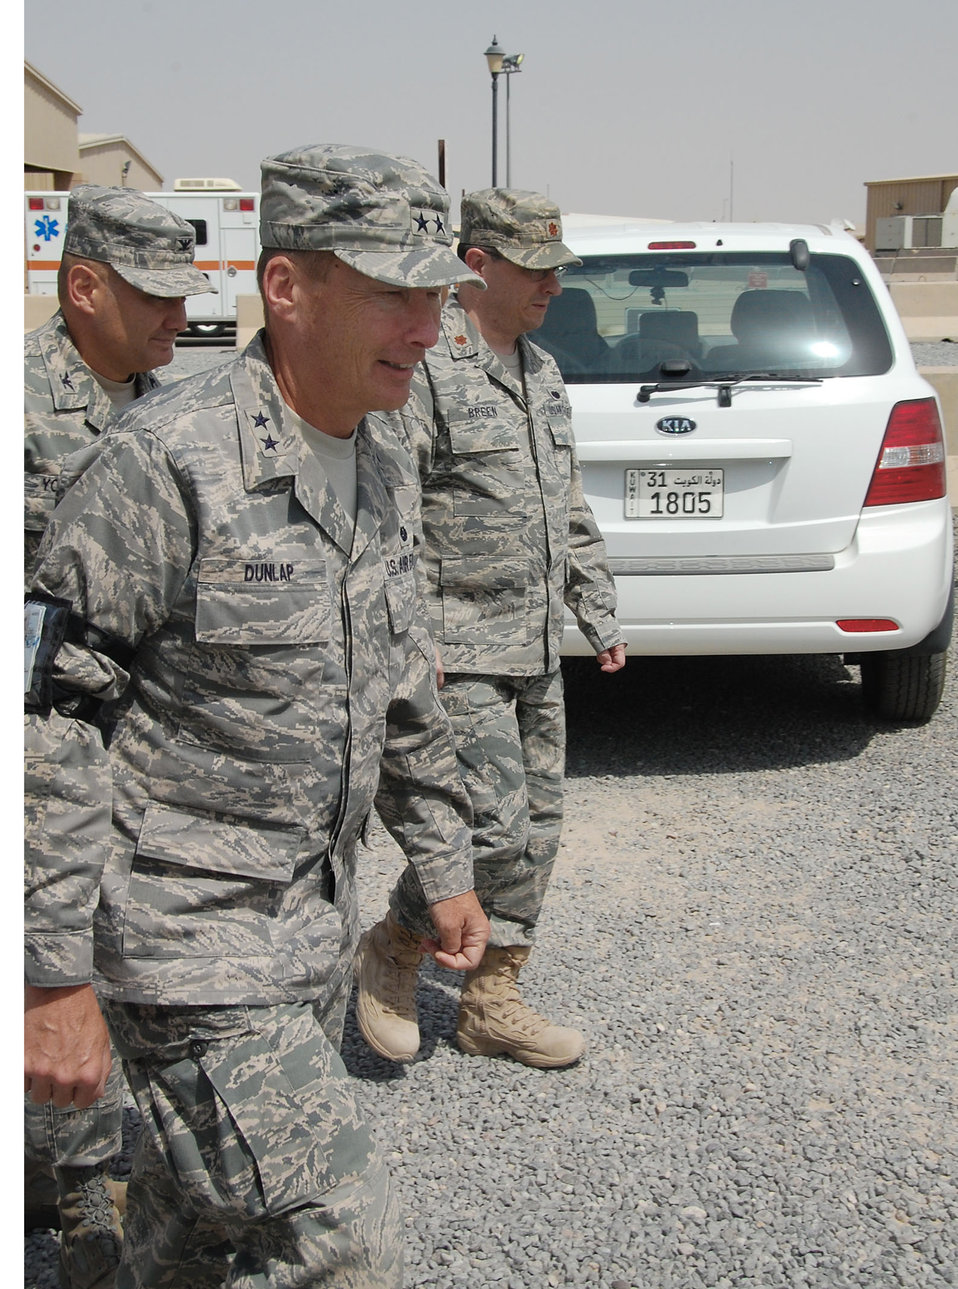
JAG visits to ensure consistency across deployed legal operations

Maj. Gen. Charles J. Dunlap Jr., the Air Force deputy judge advocate general, toured the 386th Air Expeditionary Wing Aug. 18 as part of an eight-day visit to various deployed locations to inspect military justice operations.